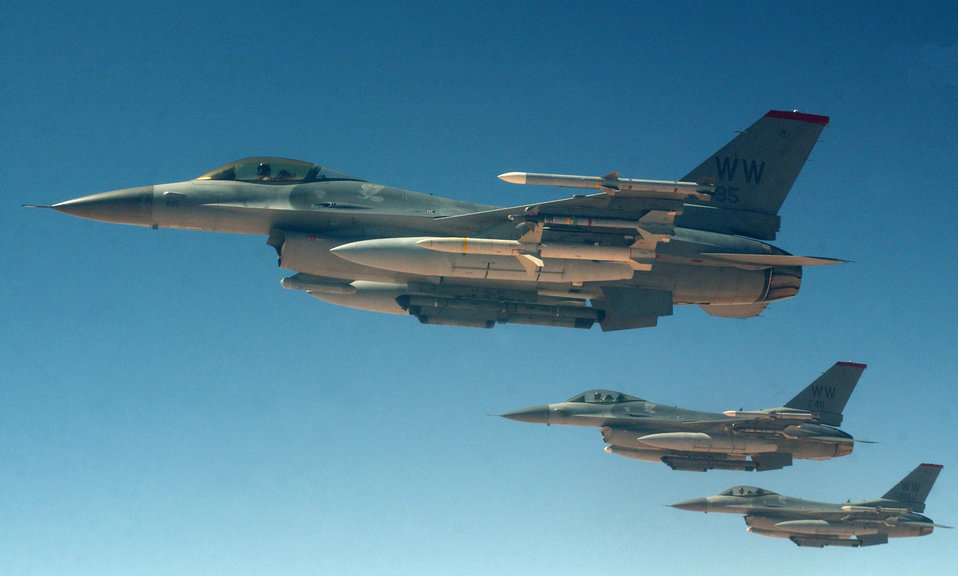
Wild Weasel trio

OPERATION IRAQI FREEDOM -- A three-ship formation of F-16 Fighting Falcons from Misawa Air Base, Japan, wait for their fourth on the wing tip of a KC-135 Stratotanker from McConnell Air Force Base, Kan., in the skies near Iraq on March 22, 2003. The F-16s are flying a mission over Iraq in support of Operation Iraqi Freedom.